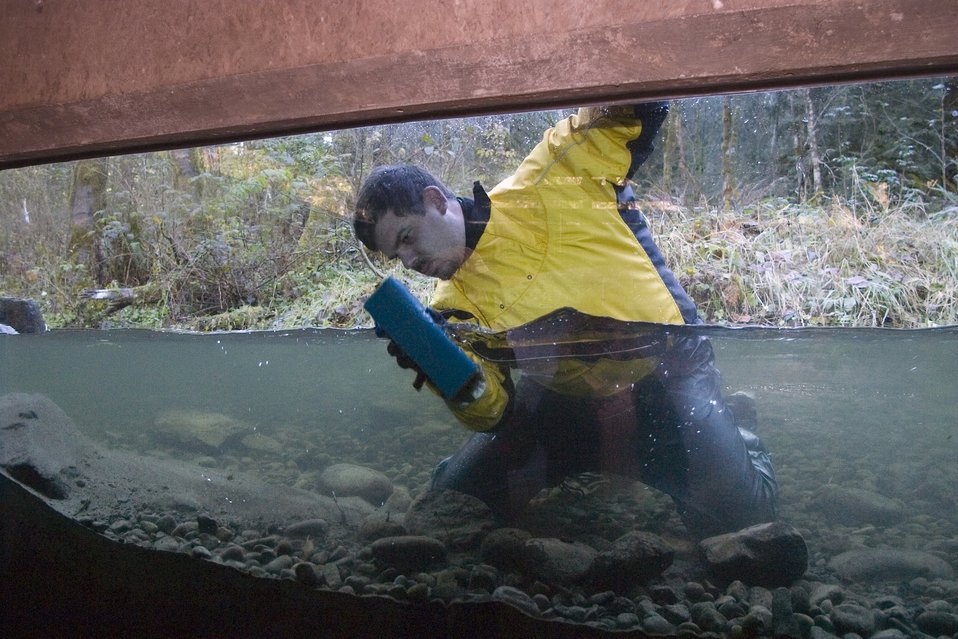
Kevin Davis, Wildwood Maintenance Worker, cleans the outside window of the salmon Viewing structure at BLM's Wildwood Recreation Area.